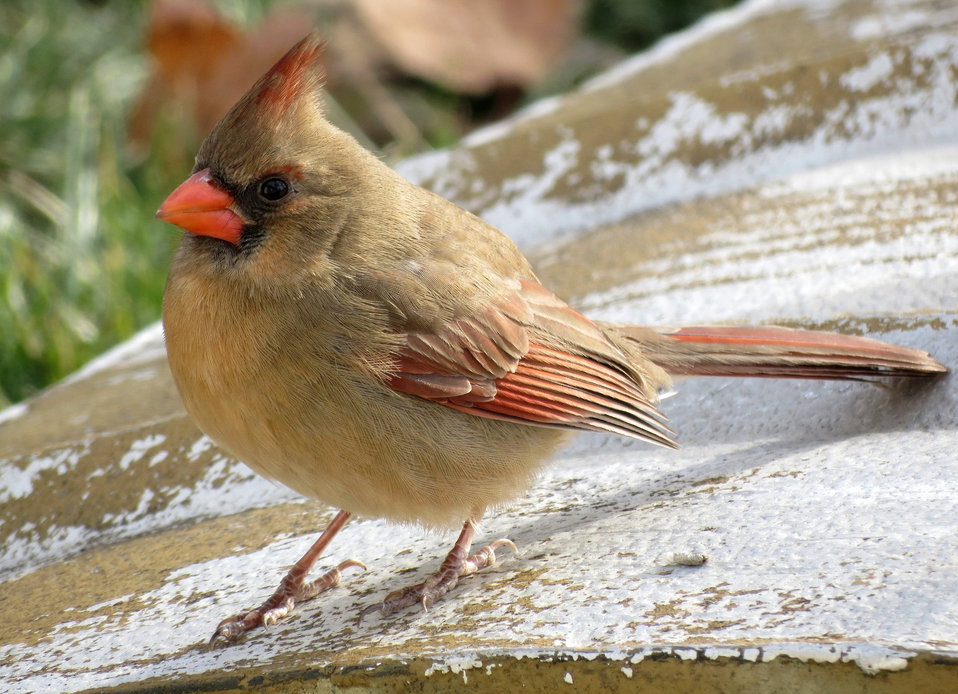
female northern cardinal

This female northern cardinal kept her eye on the camera on a sunny day at IO's Port Louisa National Wildlife Refuge. Jan. 20, 2012